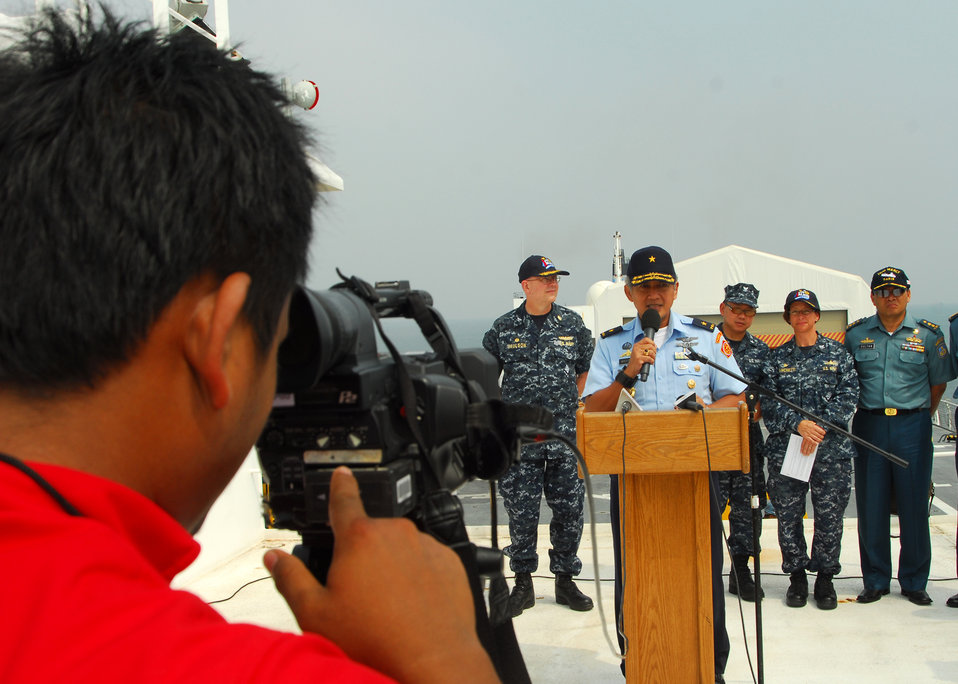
Tentara National Indonesia Surgeon General Marsekal Muda Mariano Delivers Remarks During a Media Availability Tour

Tentara National Indonesia Surgeon General Marsekal Muda Mariano gives remarks during a media availability tour aboard the Military Sealift Command hospital ship USNS Mercy (T-AH 19) during Pacific Partnership 2010 on July 7, 2010. Mercy is en route to its first stop in Indonesia during the fifth in a series of annual U.S. Pacific Fleet humanitarian and civic assistance endeavors to strengthen regional partnerships.